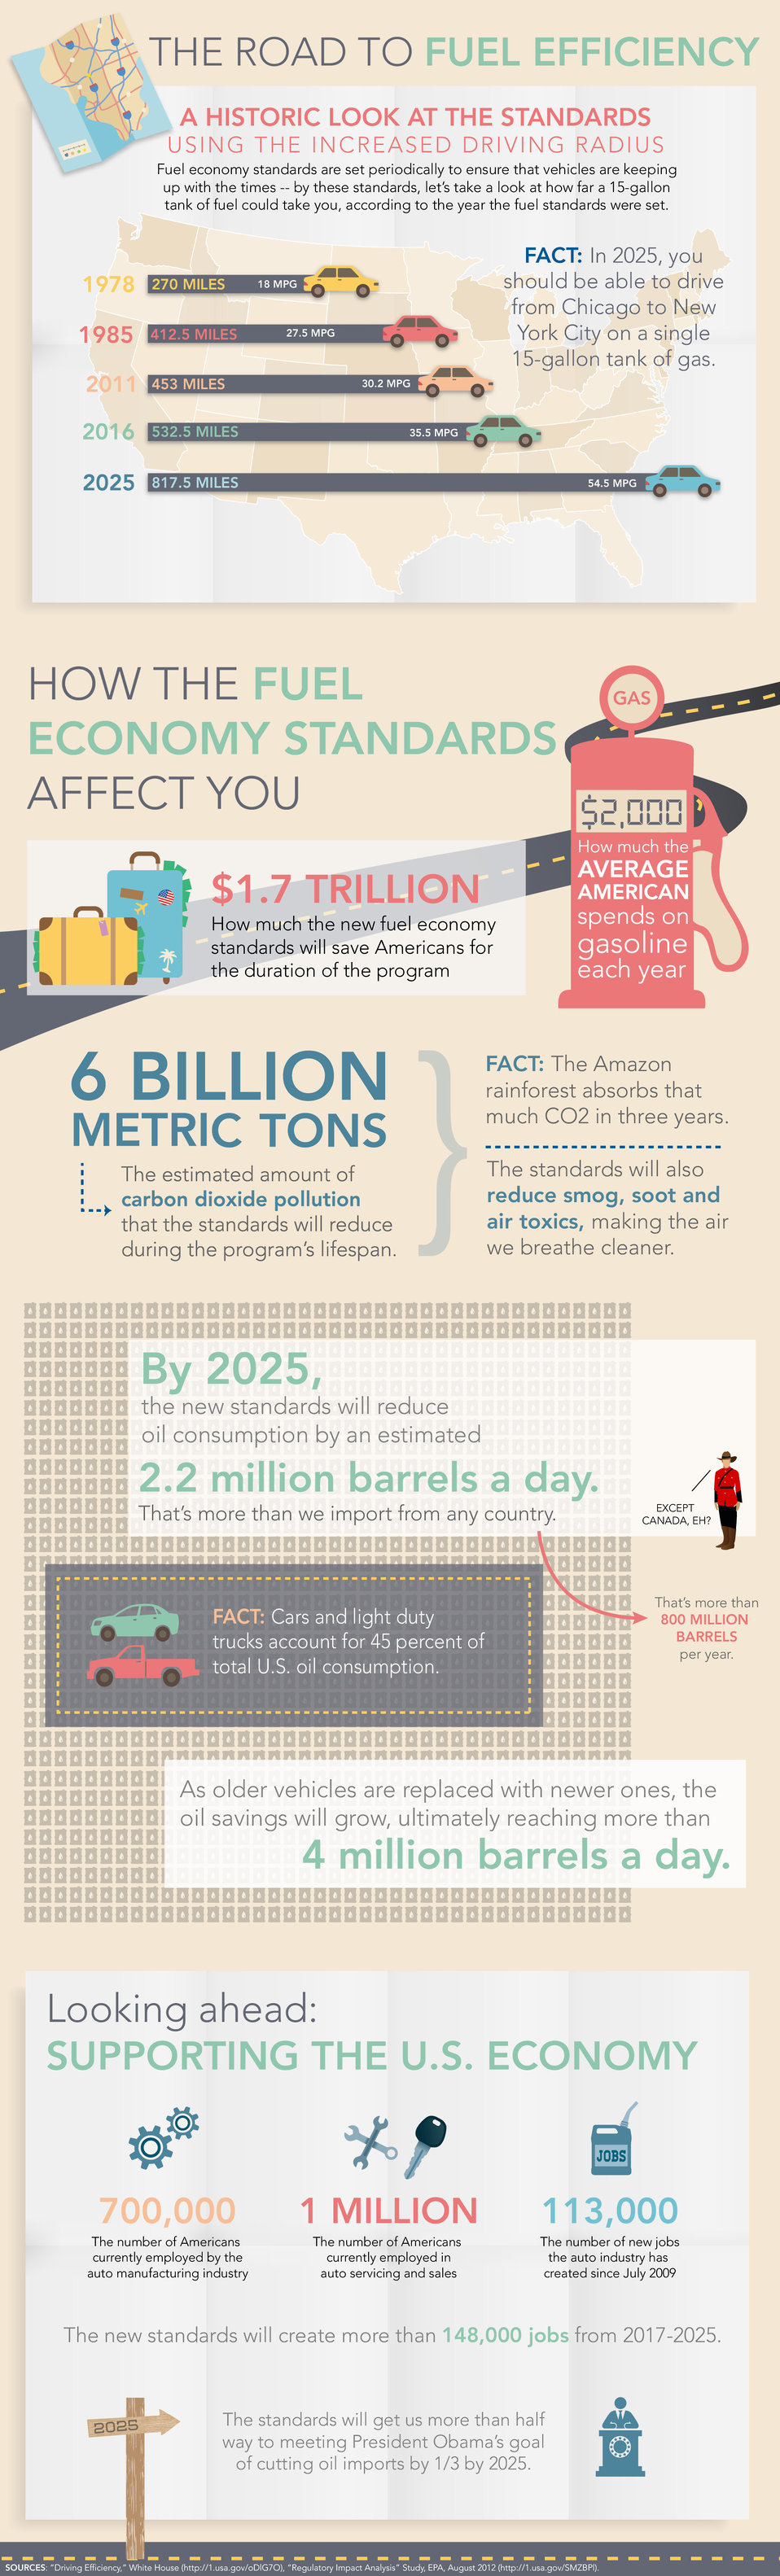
Infographic: The Road to Fuel Efficiency